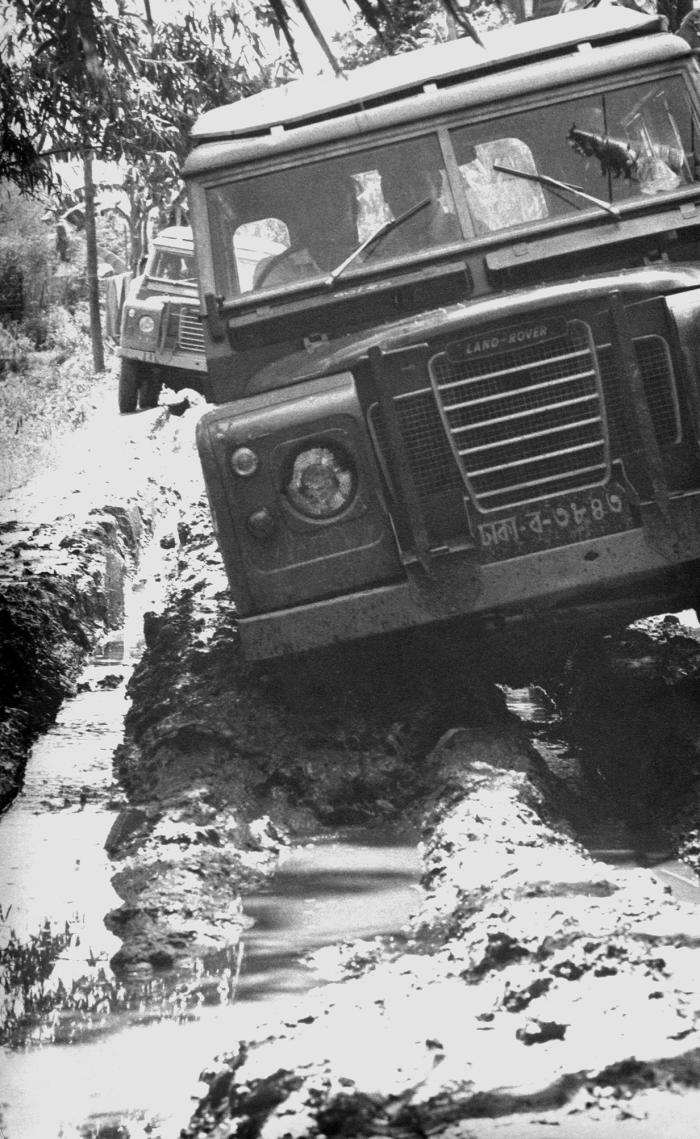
This photograph, by Pierre Claquin, M.D., B.A.C., who at the time was a member of the World Health Organization's Smallpox Eradication Program, was provided by former E.I.S. officer, Stanley O. Foster M.D., M.P.H., and was one of a series entitled 'The Story of One Smallpox Jeep', which depicted the travails faced by the jeep, and its occupants of public health practitioners, as they road through the Bangladesh countryside in an attempt to eradicate smallpox from the country.